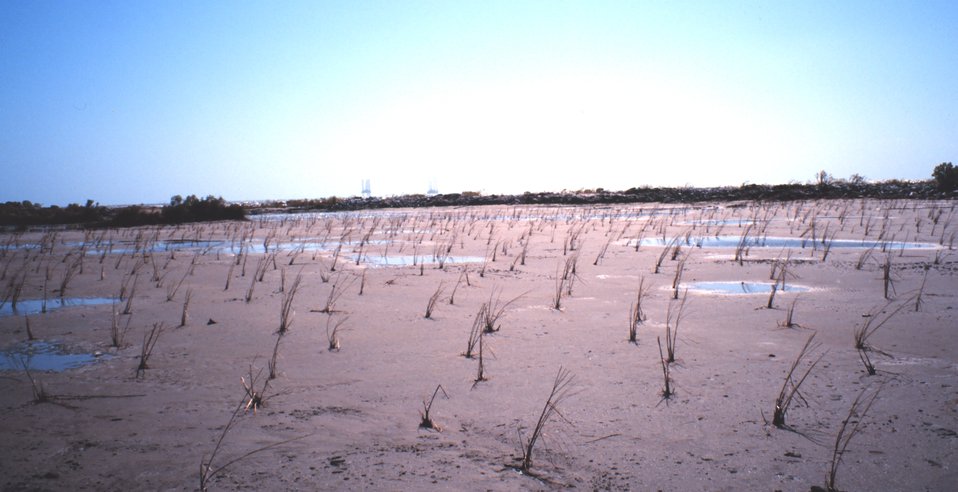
The Greenhill/East Timbalier newly created marsh with just planted Spartina alterniflora. Although plants look brown, they thrived after rainfall.